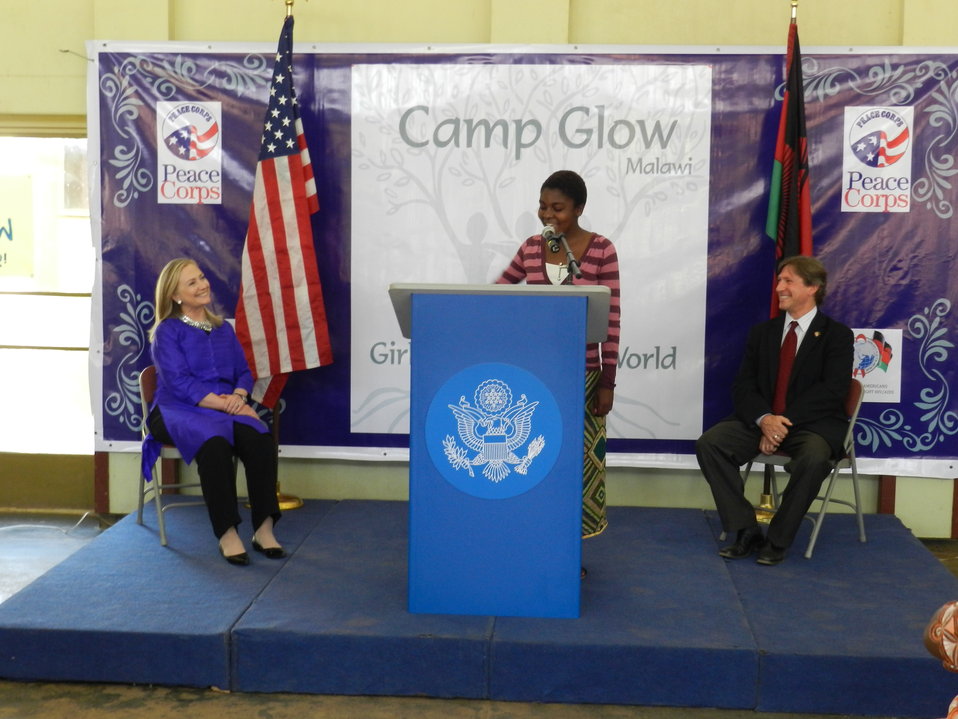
Secretary Clinton at Camp GLOW in Malawi

Anna Nkhata of Camp GLOW delivers remarks, as U.S. Secretary of State Hillary Rodham Clinton and Peace Corps Country Director Kevin Novotny listen, in Lilongwe, Malawi, August 5, 2012.